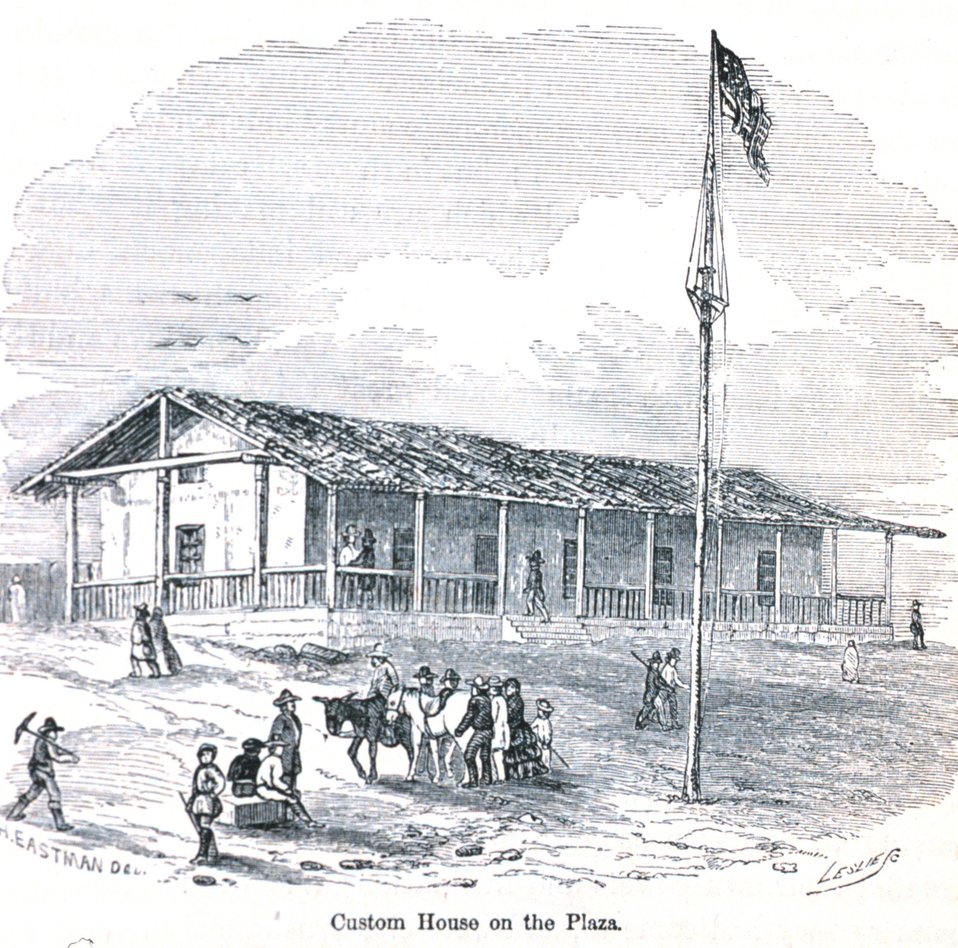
The Custom House. In: 'The Annals of San Francisco'. Frank Soule, John Gihon, and James Nesbit. 1855. Page 255. D. Appleton & Company, New York. F869.S3.S7 1855.